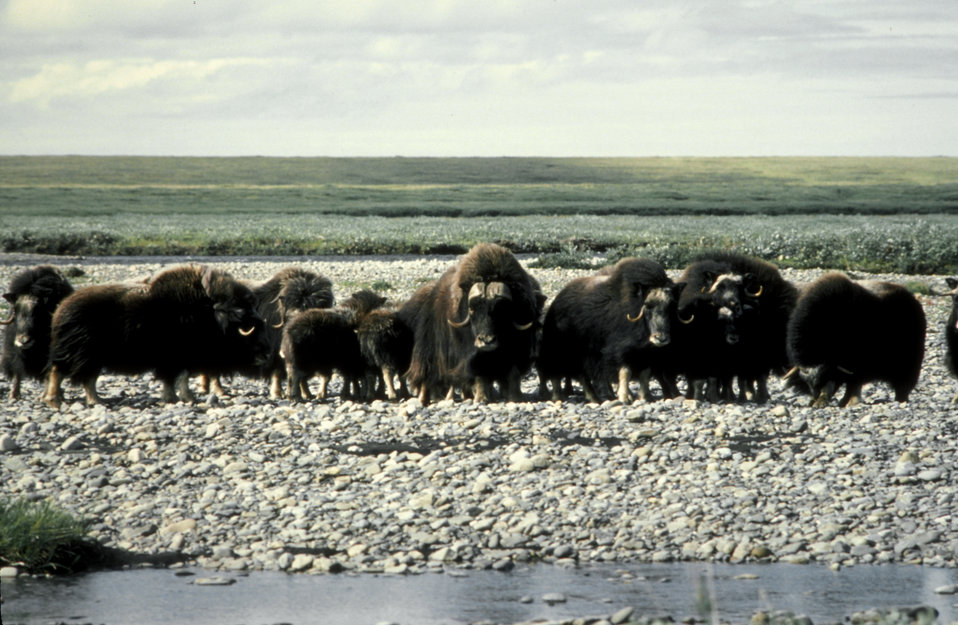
Muskoxen on Arctic National Wildlife Refuge

Muskox were reintroduced to Alaska at Nunivak Island in 1935 by the United States Fish and Wildlife Service, USFWS. They are believed to survivors of the Pleistocene era and to have first come to North American from 200,000 to 90,000 years ago.
These sturdy animals can be domesticated and yield excellent meat, milk, and wool. The wool (qiviut) is very high in insulation value and is prized for its softness and lightness. Qiviut wool yarn sells for upwards of $80.00 per ounce (28 g).
The Muskox eats grasses, sedges, reeds and other ground cover. After snowfall they paw through the snow to find food.
These social animals live in small herds of 10 to 20 animals. When threatened they form a defensive perimiter, tail to tail, with their heads facing out in a stationary ring around their calves.